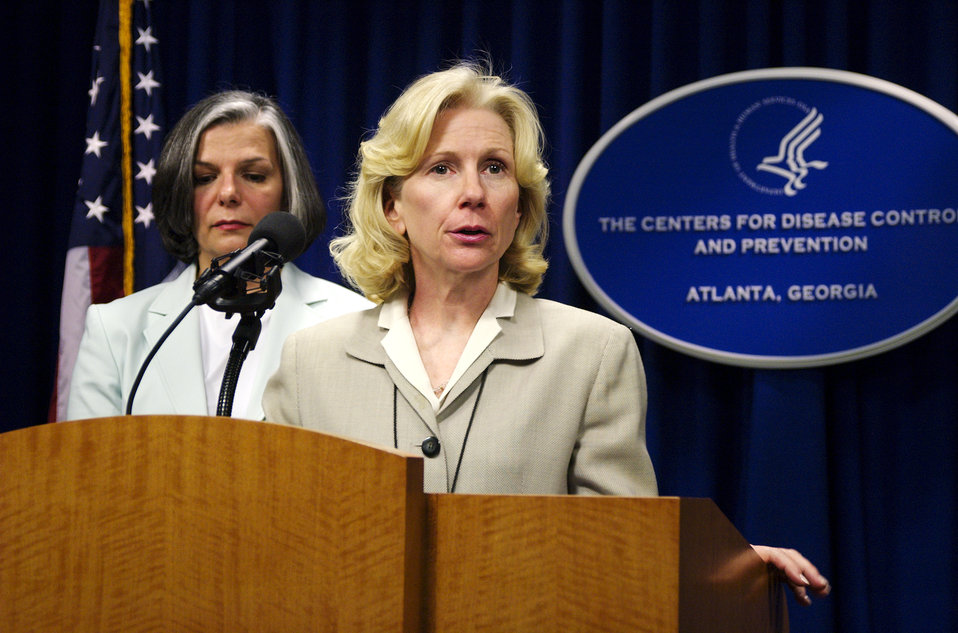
This photograph was taken during a 2004 CDC Press Conference, and included former Director of the CDC (2002 - 2008), Julie Gerberding, M.D., M.P.H., standing at left, and virologist Dr. Nancy Cox, Chief of the Influenza Branch in the National Center for Infectious Diseases (NCID), speaking at the podium.